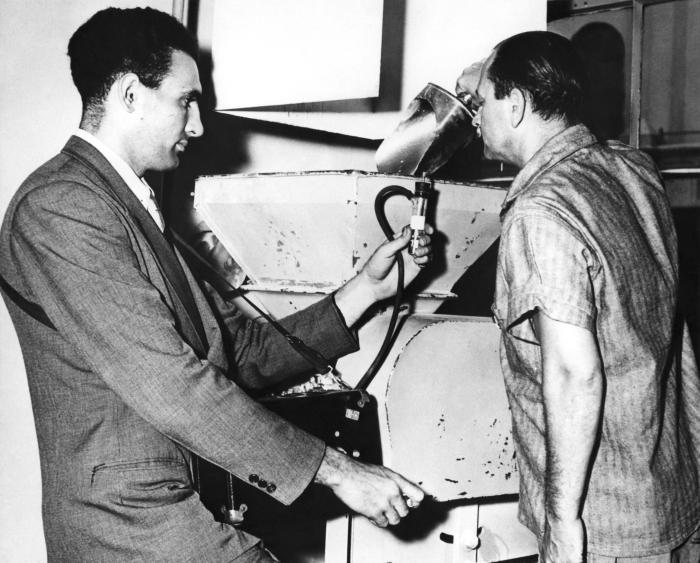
This historic image depicted an industrial hygienist as he was taking air samples in the immediate vicinity of a factory worker, who was in the process of pouring a scoop of an unknown substance into a hopper. By testing the air quality, and its content of potentially-dangerous particulates, a determination could then be made as to whether or not the air was being adequately ventilated, and if filtered breathing gear, such as a mask, need be worn. This historic image was provided by the Center for Disease Control's (CDC), National Institute for Occupational Safety and Health (NIOSH).